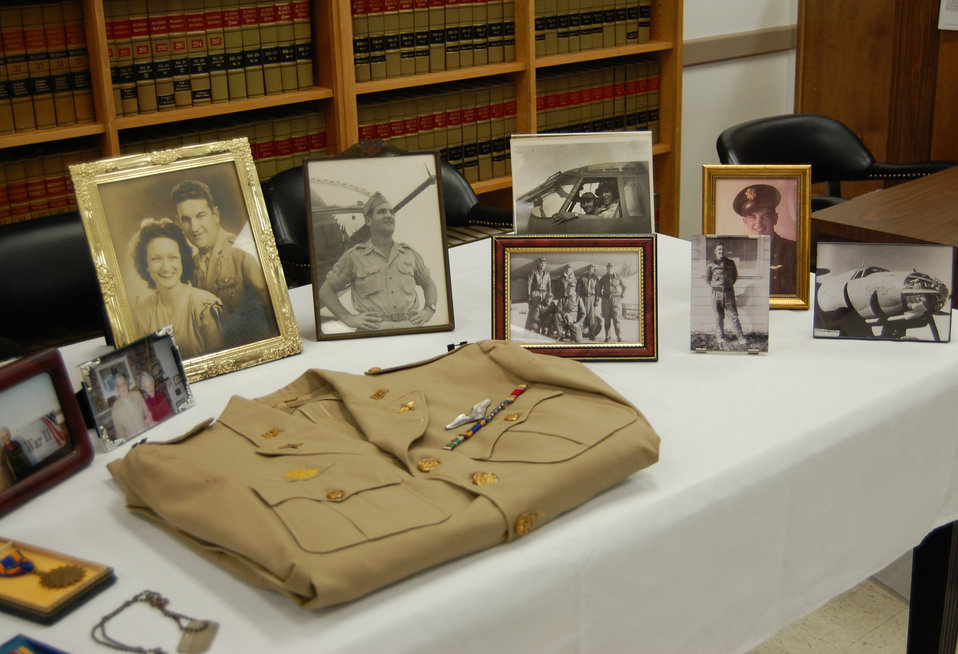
Widow receives husband's World War II medal

World War II memories of Capt. William Norred were on display during a ceremony April 13 in Greenville, Ala., where his widow was presented the Distinguished Flying Cross he earned in a wartime B-26 Marauder mission in Africa.